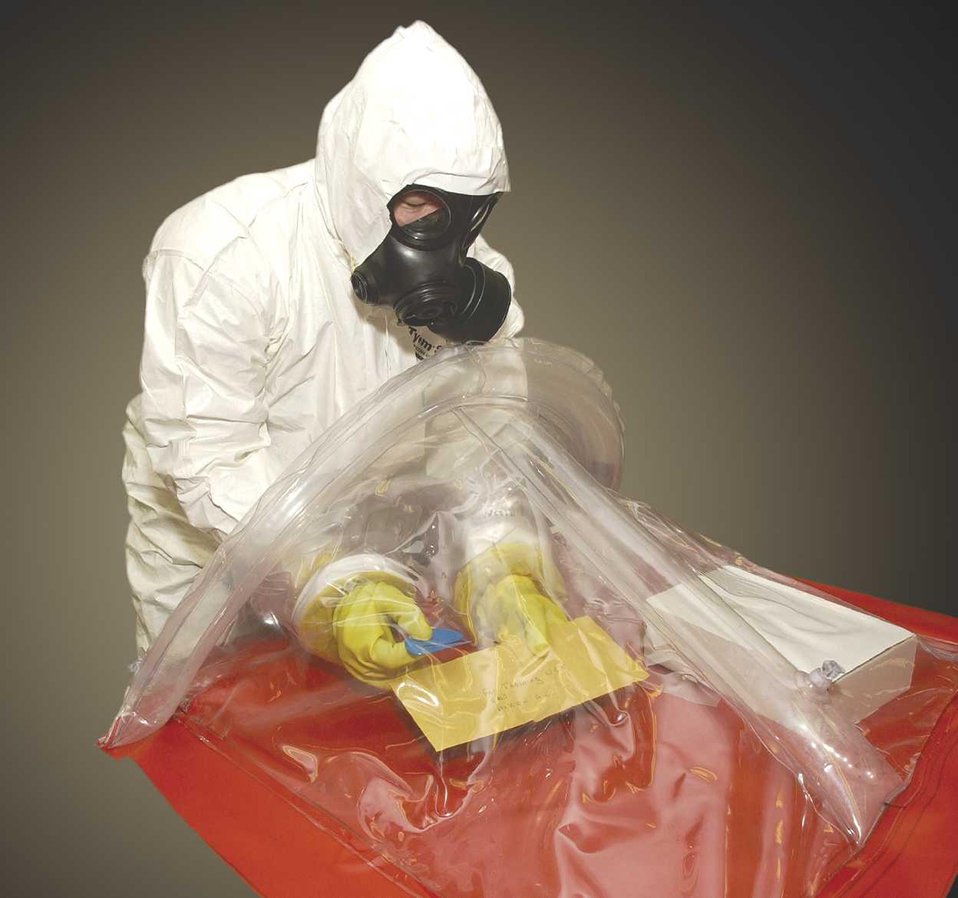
INFLATABLE GLOVEBAGS AID IN COMBATING BIO-TERRORISM.

SAVANNAH RIVER'S CONTAINMENT FABRICATION FACILITY, WHICH DESIGNS AND FABRICATES RADIOLOGICAL CONTAINMENTS OF ANY SIZE FOR SPECIFIC JOB, DESIGNED AND PRODUCED SELF-SUPPORTING PORTABLE GLOVEBAGS WITH INFLATABLE FRAMES. THESE GLOVEBAGS ALLOW PERSONNEL TO SAFELY EXAMINE SUSPICIOUS MAIL OR PACKAGES.